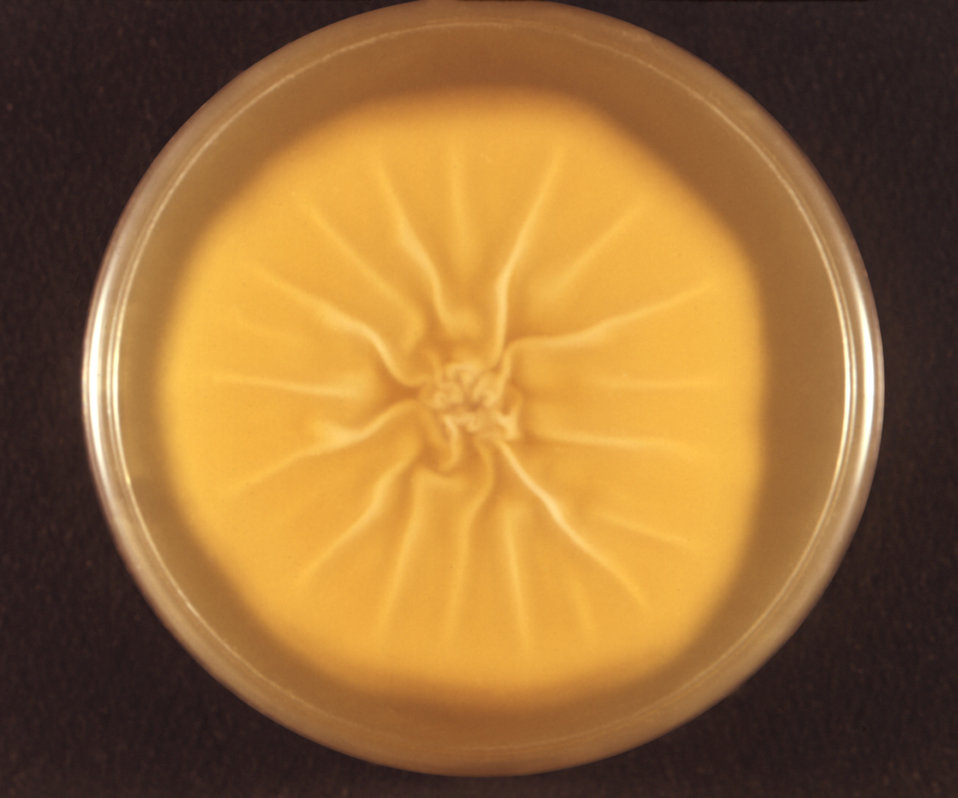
This image depicts a reverse view, i.e., view from the bottom, of a Petri dish in which a colony of the dermatophytic fungal organism Trichophyton mentagrophytes, formerly known as T. quinckeanum, had been cultivated. See PHIL 12657, for a view of this fungal colony from the front.